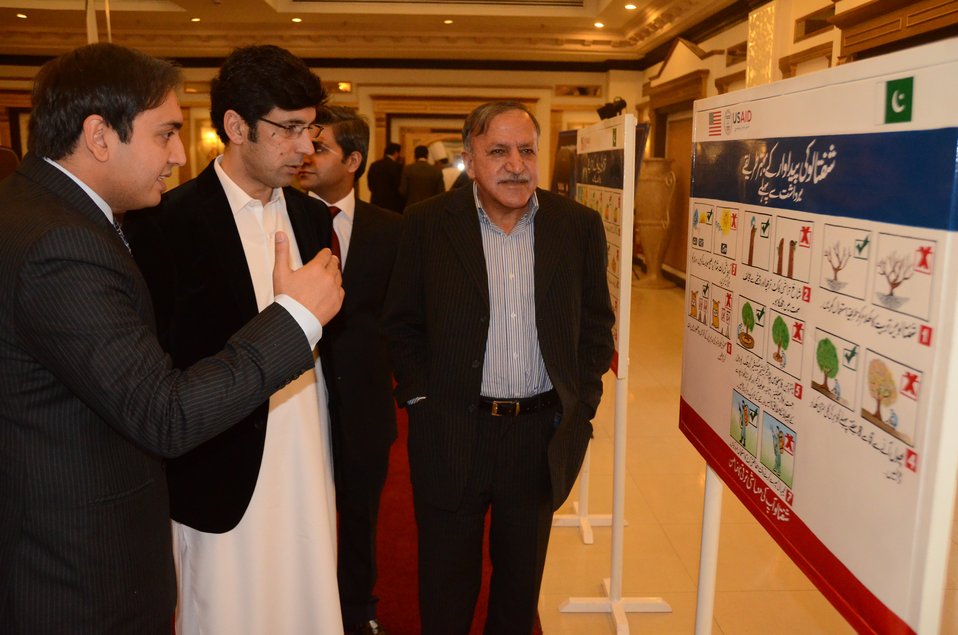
Shahram Khan Tarrakai Minister for Agriculture, Livestock and Cooperation KP with USAID Firms project staff at the project interventions walk-through.